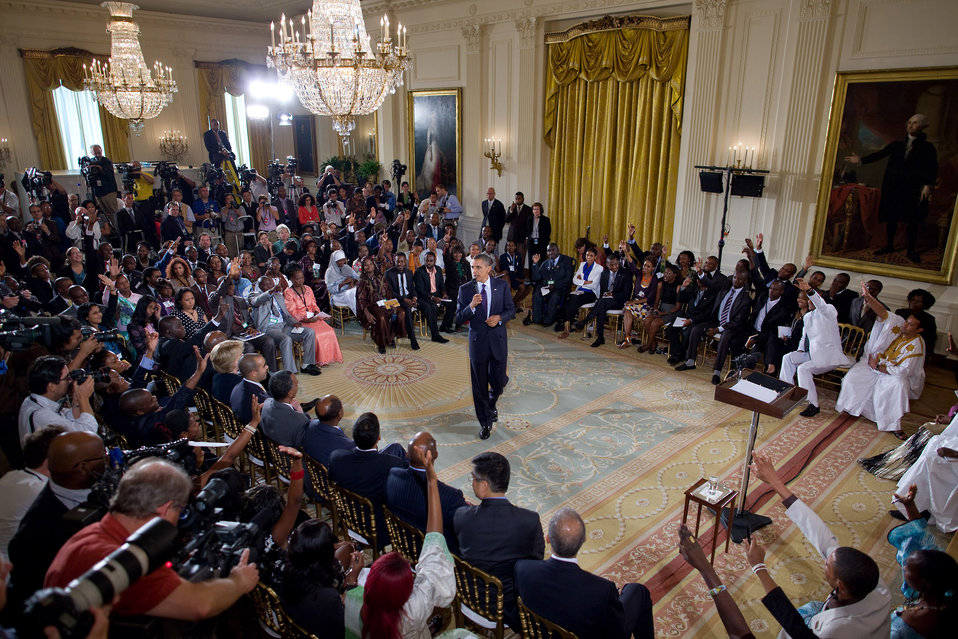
President Obama Hosts a Town Hall in the East Room of the White House

President Barack Obama hosts a Town Hall with young African leaders in the East Room of the White House in Washington, D.C., on August 3, 2010.